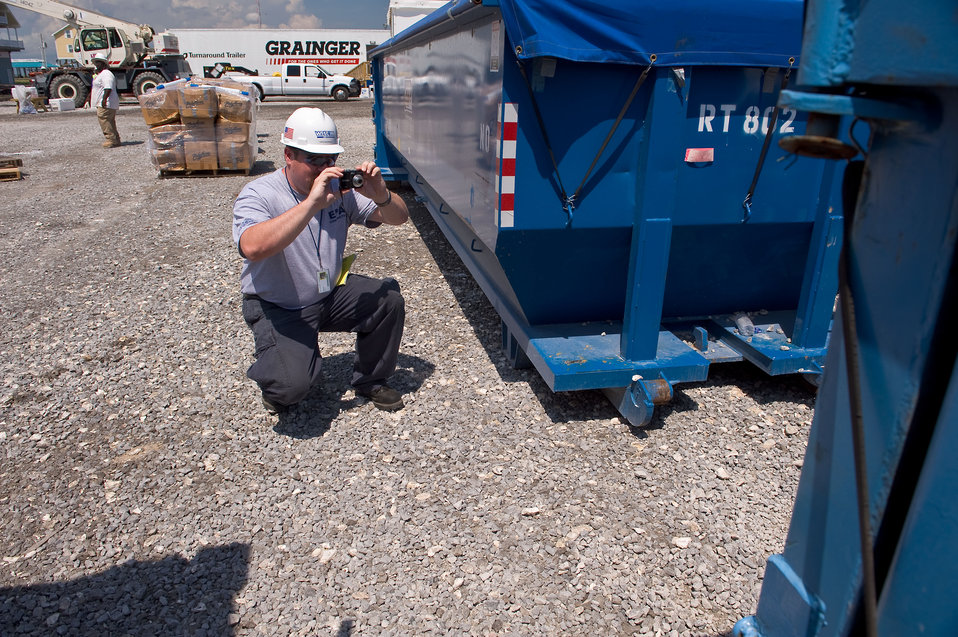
August 6, Documenting the waste staging areas

Dan Muzrall with EPA, documents the condition of the waste containers at a designated cleanup staging area.